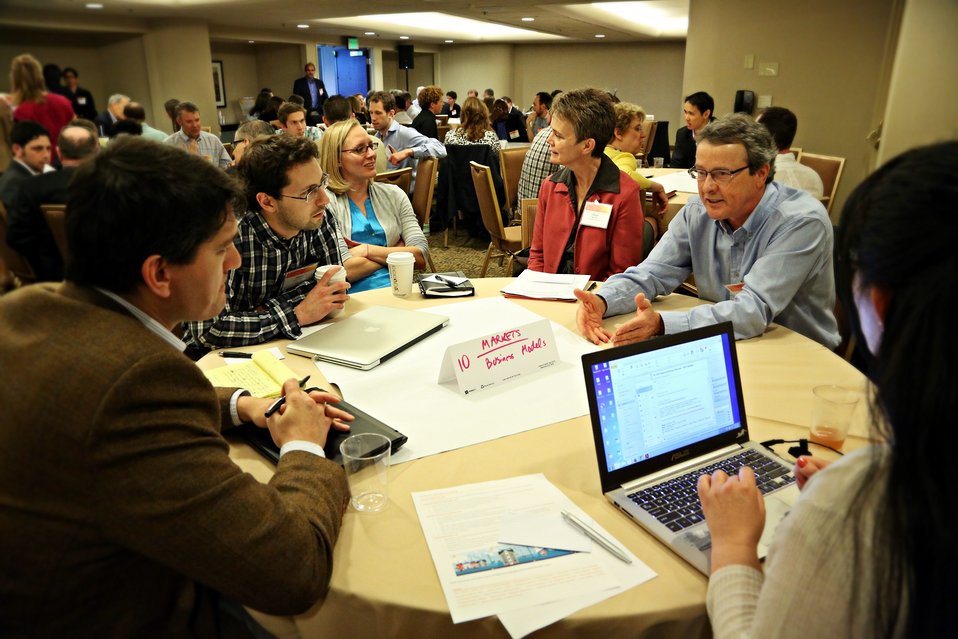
Day 2 Subprogram Overviews 6

Attendees chat at a Subprogram Overview session.